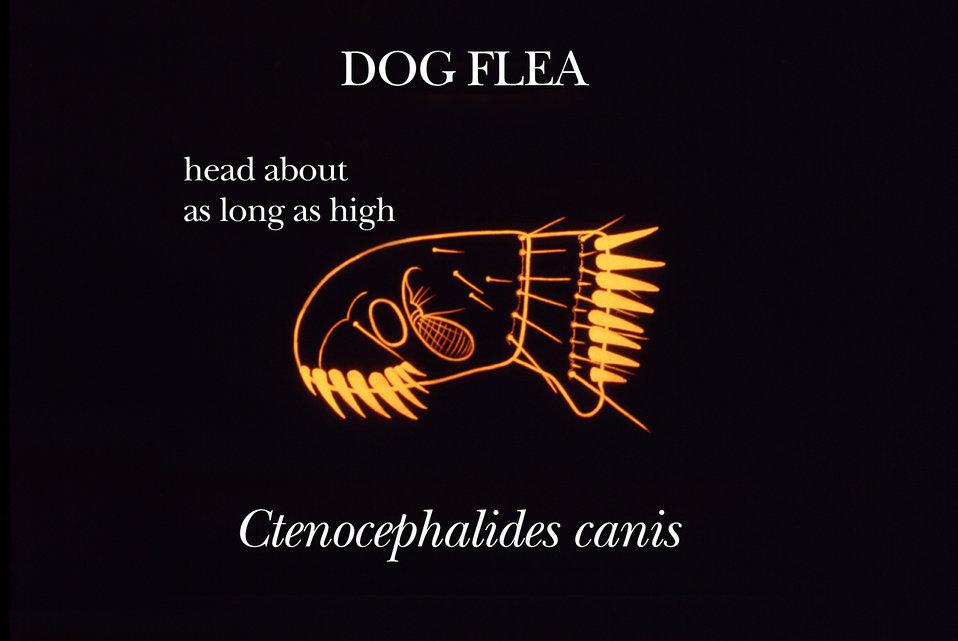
This diagram highlights the anatomic features of the head region of Ctenocephalides canis, the 'dog flea'.